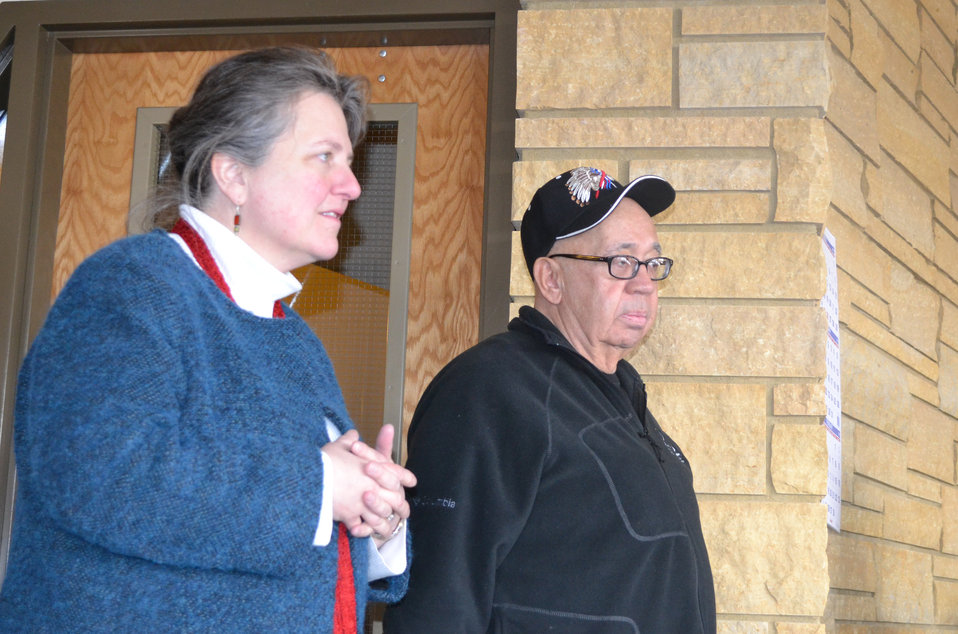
Agriculture Deputy Secretary Kathleen Merrigan hosted two roundtable meetings in Lower Brule, SD on Feb. 28, 2013. Deputy Secretary Merrigan held a press availability with tribal leaders to reaffirm the Obama Administration’s commitment to Indian Country and highlight the U.S. Department of Agriculture’s (USDA) efforts to promote business development and job creation in rural South Dakota.